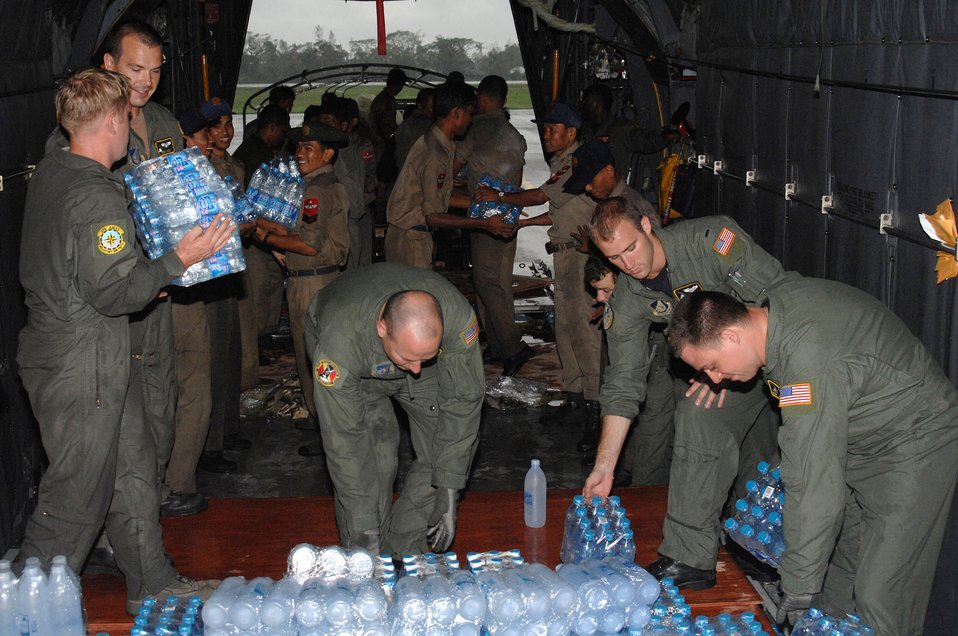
Joint Task Force Caring Response brings help to Burma

Air Force members from Yokota Air Base, Japan, assist with the delivery of humanitarian relief supplies for the people of Burma May 19 at Yangon International Airport in Burma. Approximately 15,000 pounds of water, water containers and mosquito netting were unloaded from the C-130 Hercules aircraft. The Air Force members are part of the Joint Task Force Caring Response, a multi-service Humanitarian Assistance and Disaster Relief effort for Burmese citizens devastated by a recent cyclone.